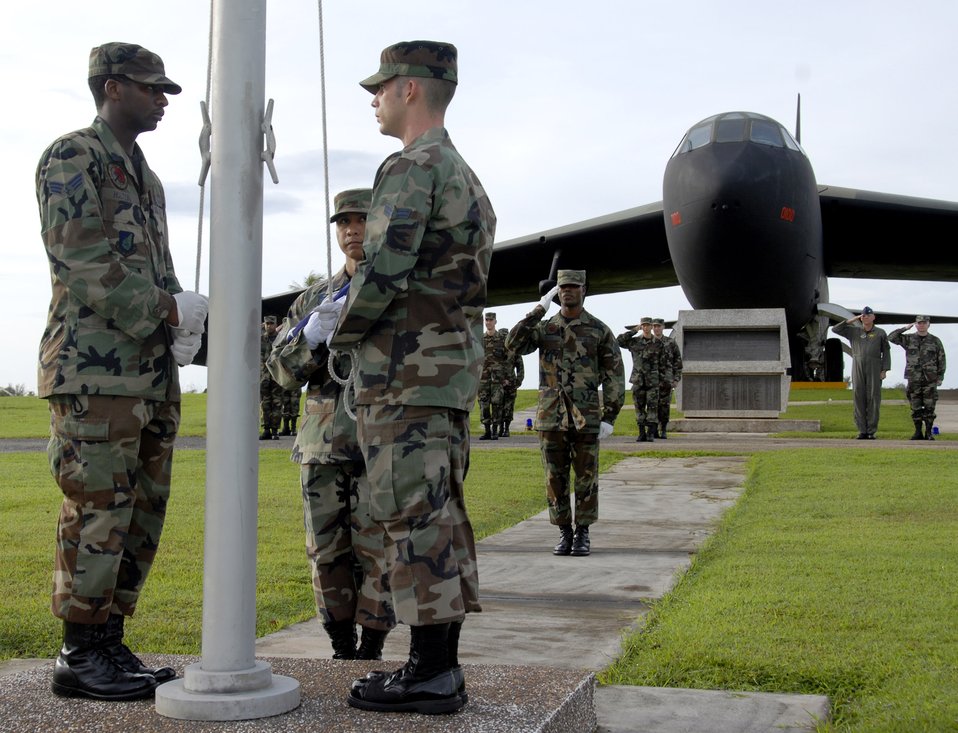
AFOSI anniversary

Members of the base honor guard and Air Force Office of Special Investigation, Detachment 602, conduct reveille in front of Arc Light Memorial Park on Andersen Air Force Base, Guam, July 31 to commemorate the 60th anniversary of AFOSI. Situated across the Pacific dateline, Det. 602 is the first AFOSI detachment to raise the flag during the year-long celebration. AFOSI plans to lower the same flag on Hickam AFB, Hawaii, July 31, 2008, to conclude the year-long anniversary. AFOSI has been the Air Force's major investigative service since Aug. 1, 1948. The agency reports to the Inspector General, Office of the Secretary of the Air Force and consisting of more than 2,900 federal agents and support personnel. OSI provides professional investigative services to commanders of all Air Force activities. Its primary responsibilities are criminal investigations and counterintelligence services.